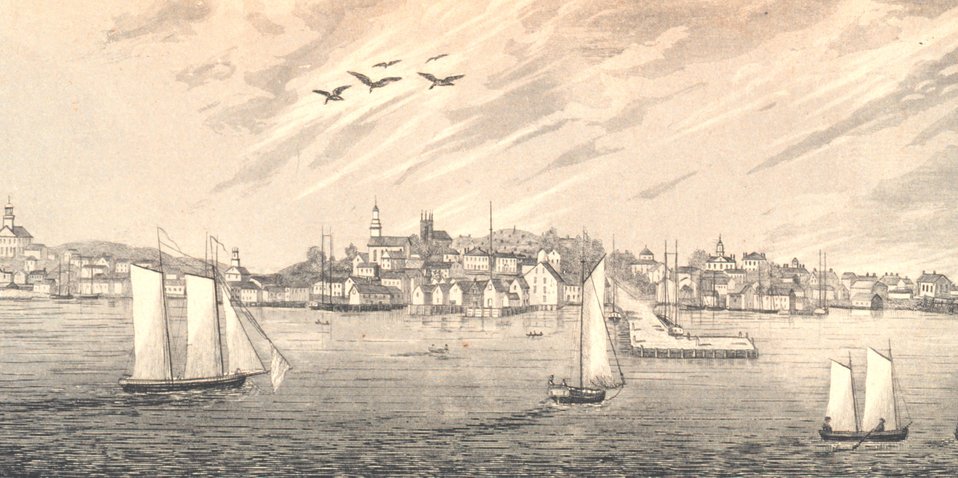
Eastern view of Plymouth from the harbor. In: Historical Collections ... of Every Town in Massachusetts. 1841.